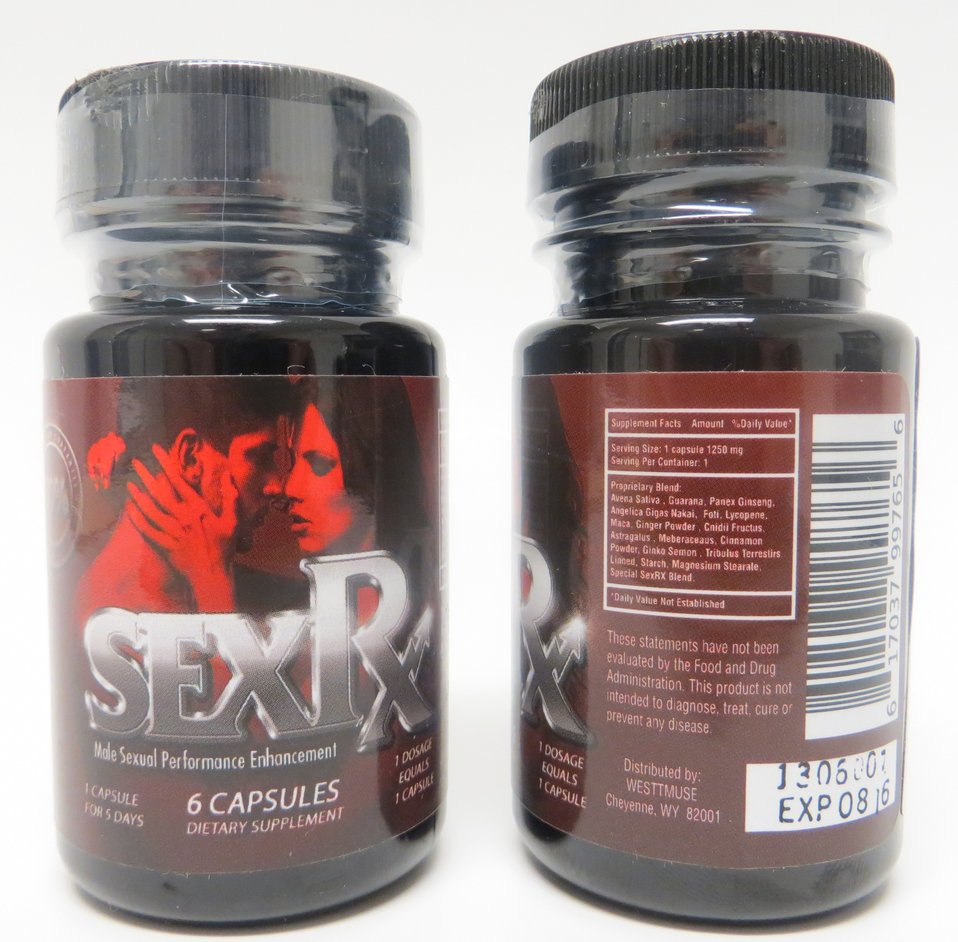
SexRx

January 28, 2014 - The FDA is advising consumers not to purchase or use Tonic Life BP, a product promoted and sold as a dietary supplement for sexual enhancement. The product was found to contain undeclared sildenafil and tadalafil.